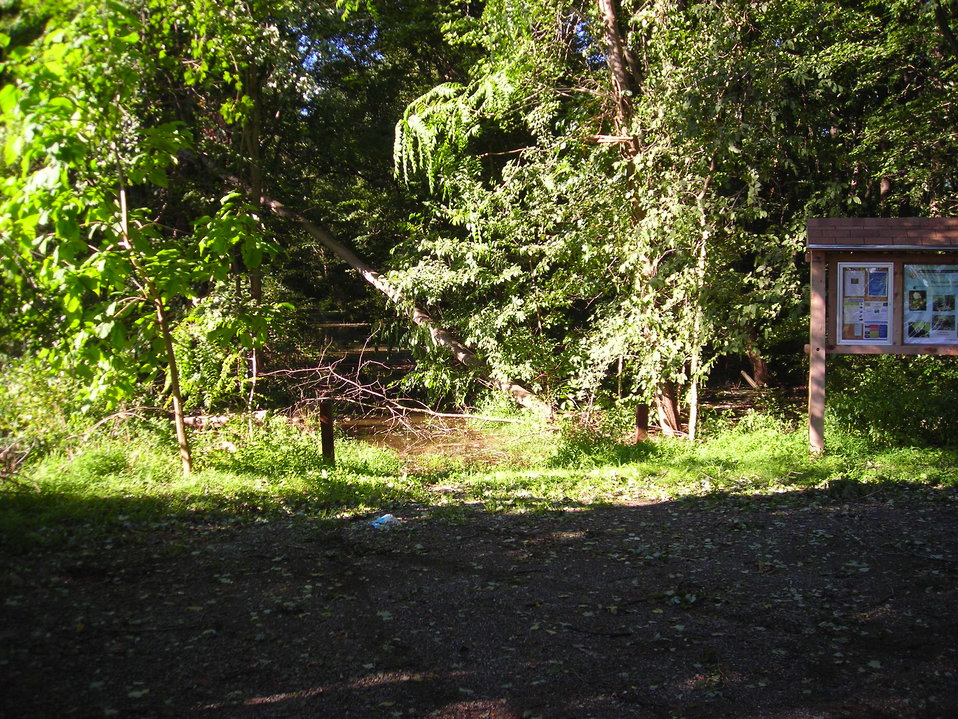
Hurricane Damage at Wallkill River National Wildlife Refuge August 30, 2011

Fallen tree at Wallkill River National Wildlife Refuge in Sussex, NJ.